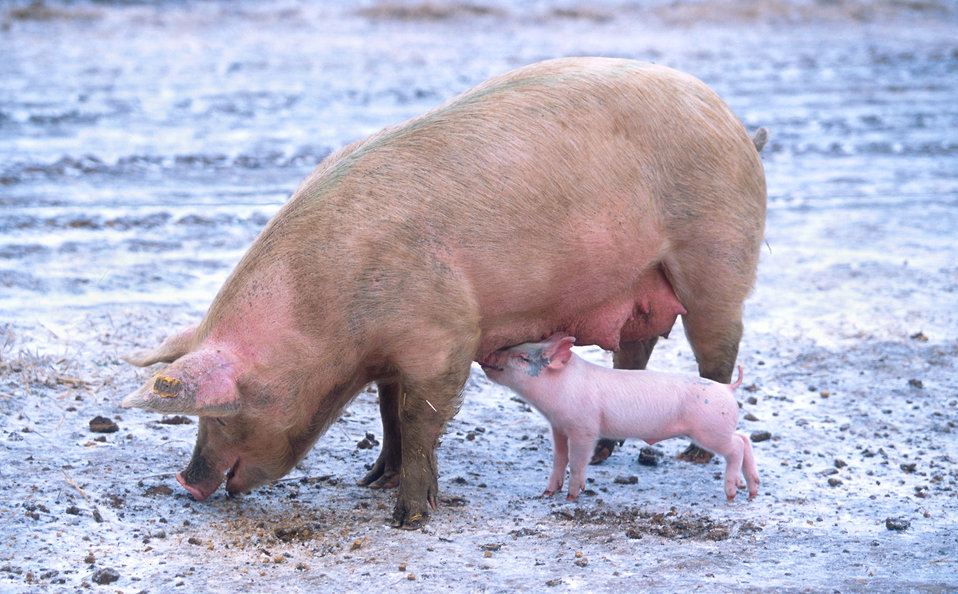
A piglet nurses from its mother on May 1, 2012.